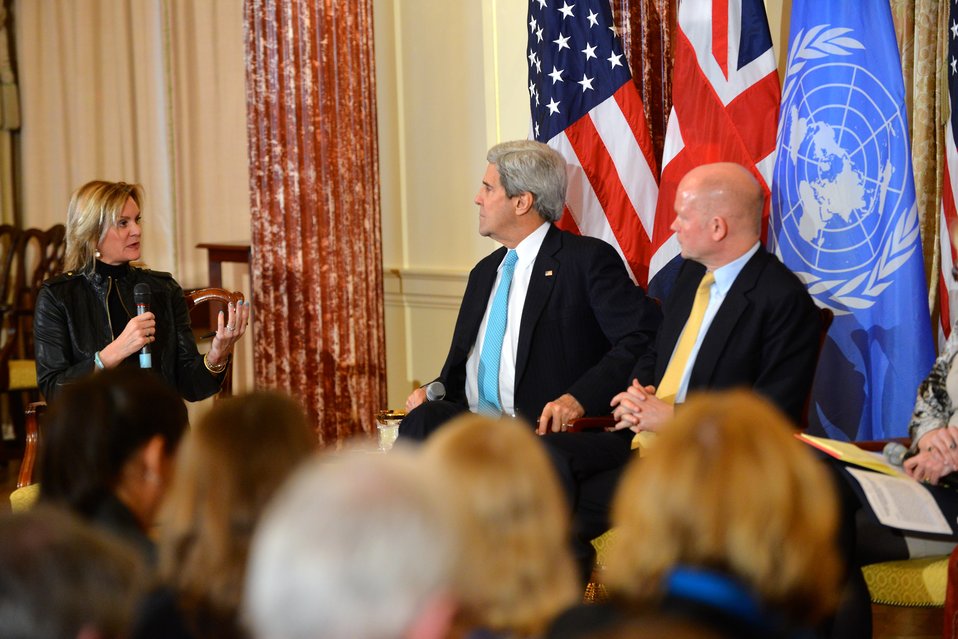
Secretary Kerry and U.K. Foreign Secretary Hague Participate in a Panel on Efforts to Prevent and Respond to Sexual Violence in Conflict

U.S. Secretary of State John Kerry and U.K. Secretary of State for Foreign and Commonwealth Affairs William Hague host a panel on ending and preventing sexual violence in conflict situations at the U.S. Department of State in Washington, D.C., on February 25, 2014.